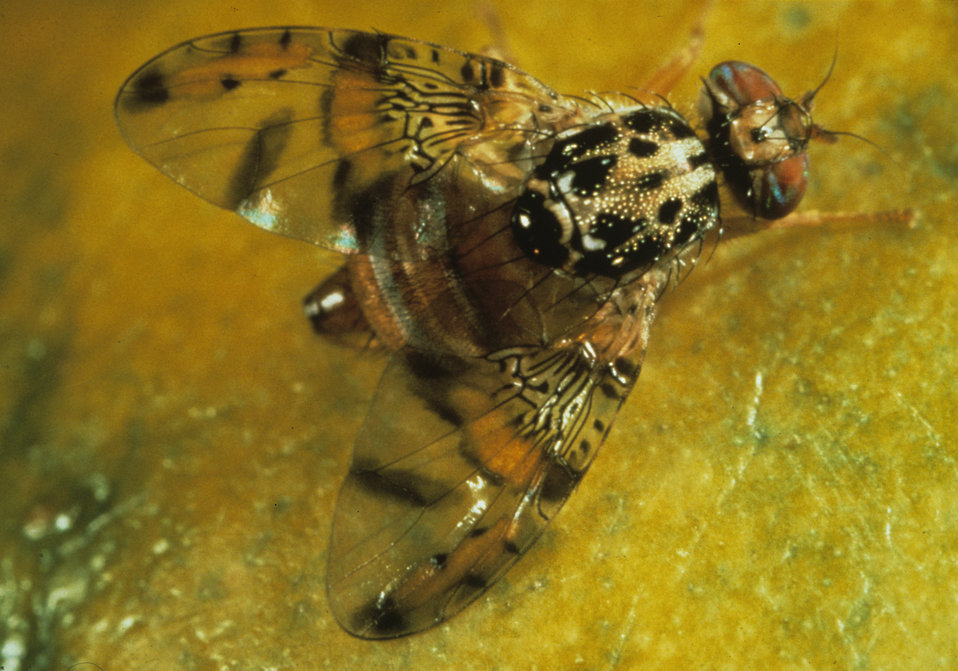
The Mediterranean fruit fly (Medfly) is an invasive species of pest that can cause extensive damage to a large variety of fruit crops. This destructive pest is native to the Mediterranean area but has spread to Australasia, and North and South America. The U.S. Department of Agriculture’s (USDA) Animal and Plant Health Inspection Service (APHIS) has established an action plan, which provides guidelines and actions for the eradication of a Mediterranean fruit fly (Medfly) infestation.